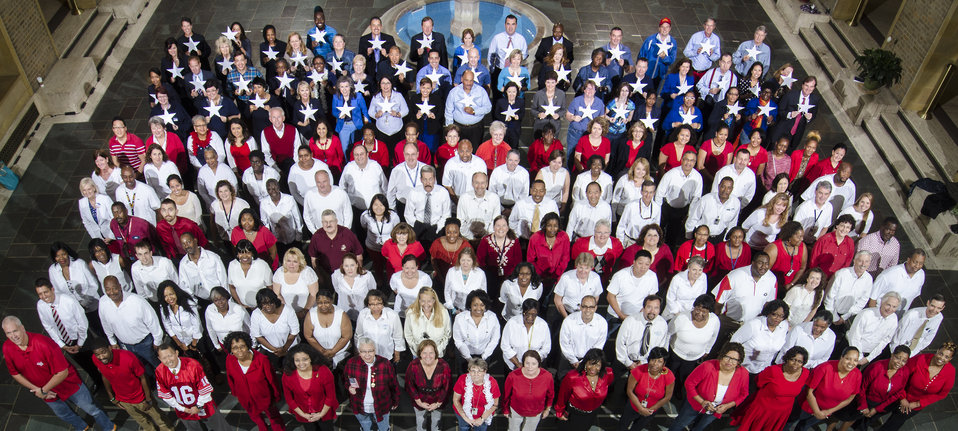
U.S. Department of Agriculture (USDA) Departmental Management (DM) personnel form a human flag on the Whitten Building patio in Washington, D. C. on Sep. 27, 2013.